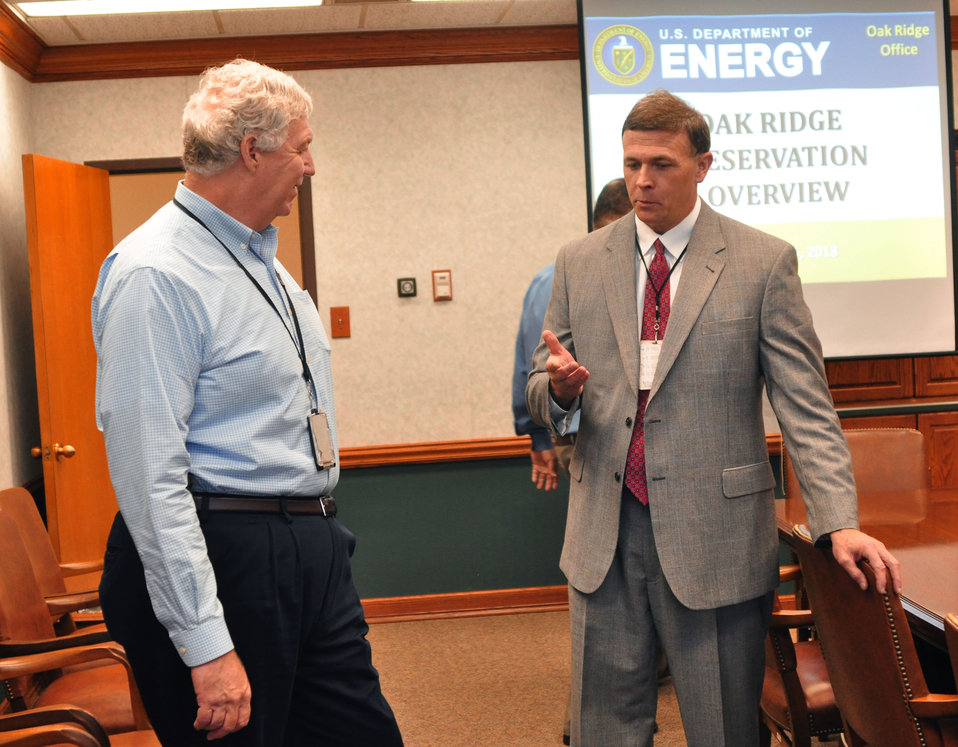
Richard Serino Deputy Administrator, FEMA and Don Thress Chief Counsel for DOE ORO in Oak Ridge 2013

13-116-3 DOE photo Lynn Freeny 9-26-2013 Oak Ridge Tennessee